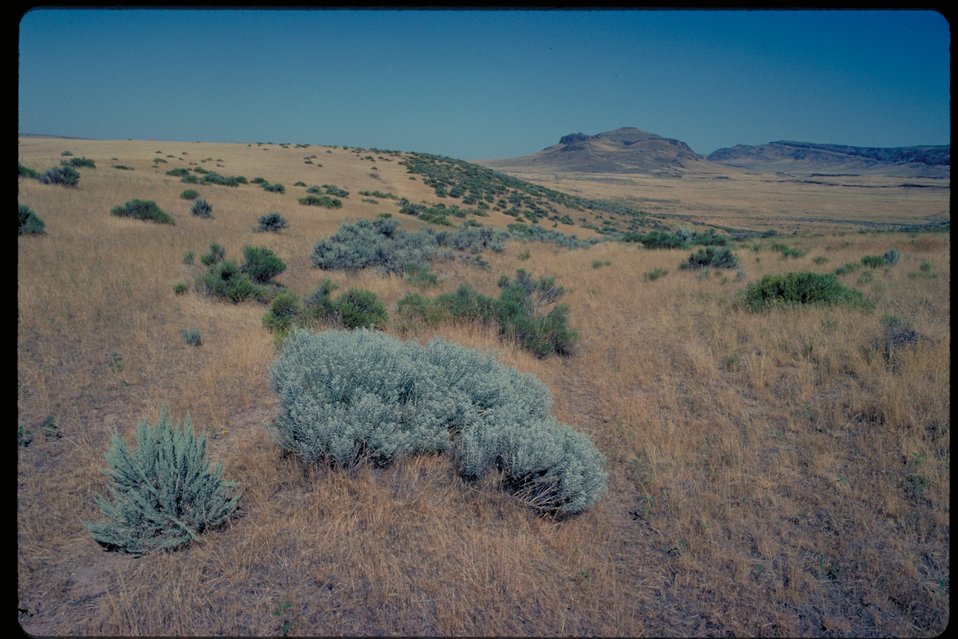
Kelton road between Bennett Creek and Teapot Dome Oregon Trail Lower Snake River District